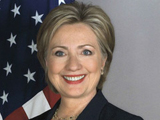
Clinton 160x120